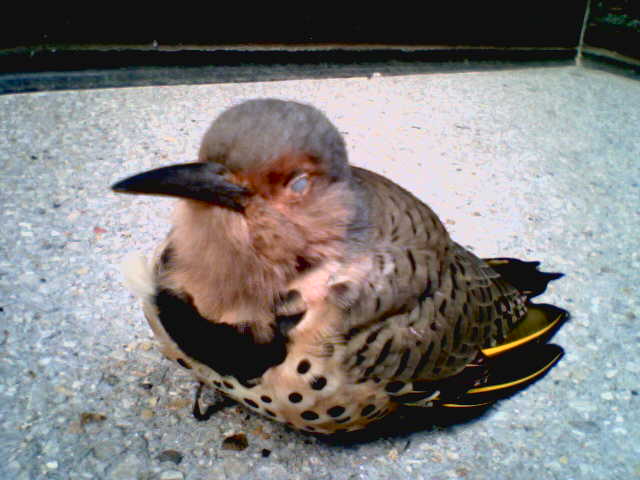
Shot in downtown Chicago, the bird hit a window and had become disoriented. Eventually the bird was nursed to health and released.